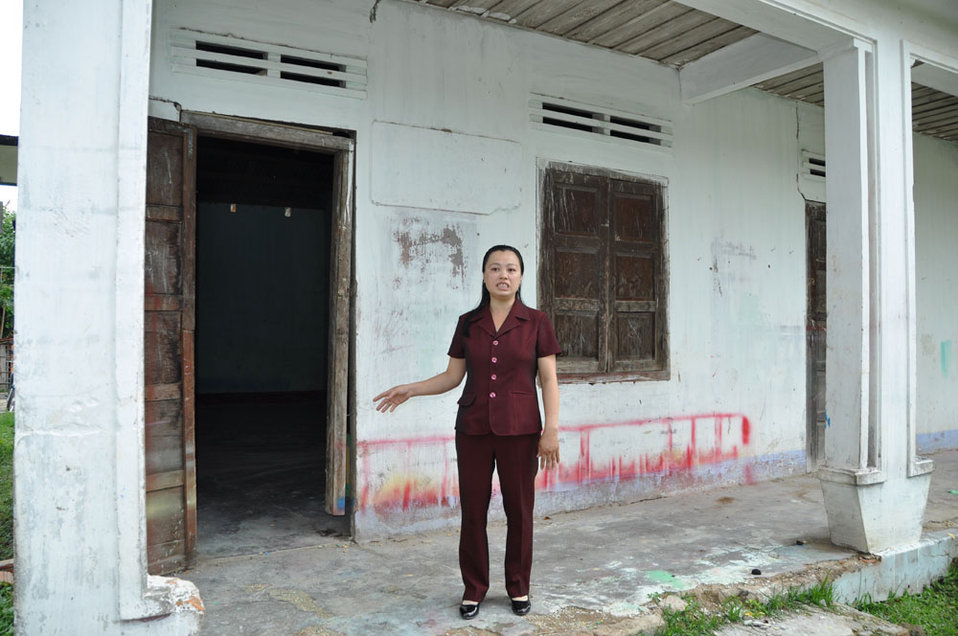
A local official shows the previous rooms where kindergarten classess were held in one commune in Kon Tum Province.